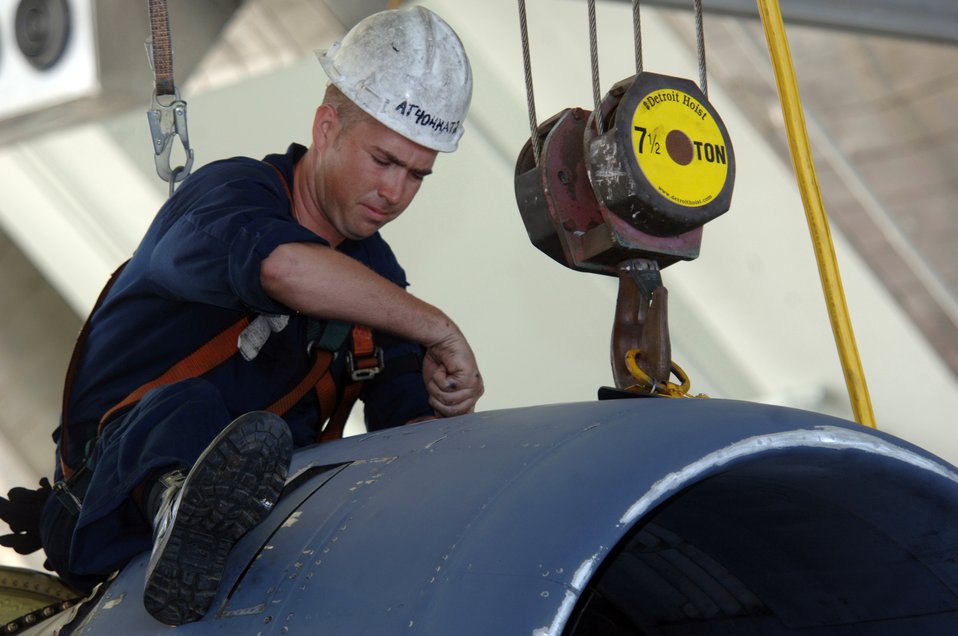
Final inspection

ANDERSEN AIR FORCE BASE, Guam (AFPN) -- Senior Airman Tommy Taylor inspects the engine of his B-52 Stratofortress aircraft during phase maintenance at Hangar 1 here. Airman Taylor is deployed from the 2nd Maintenance Squadron based at Barksdale Air Force Base, La. The B-52s come here from a forward-deployed location and go into phase maintenance after 300 flying hours. The $34-million hangar is the newest in the Air Force and can house any type of Air Force aircraft.